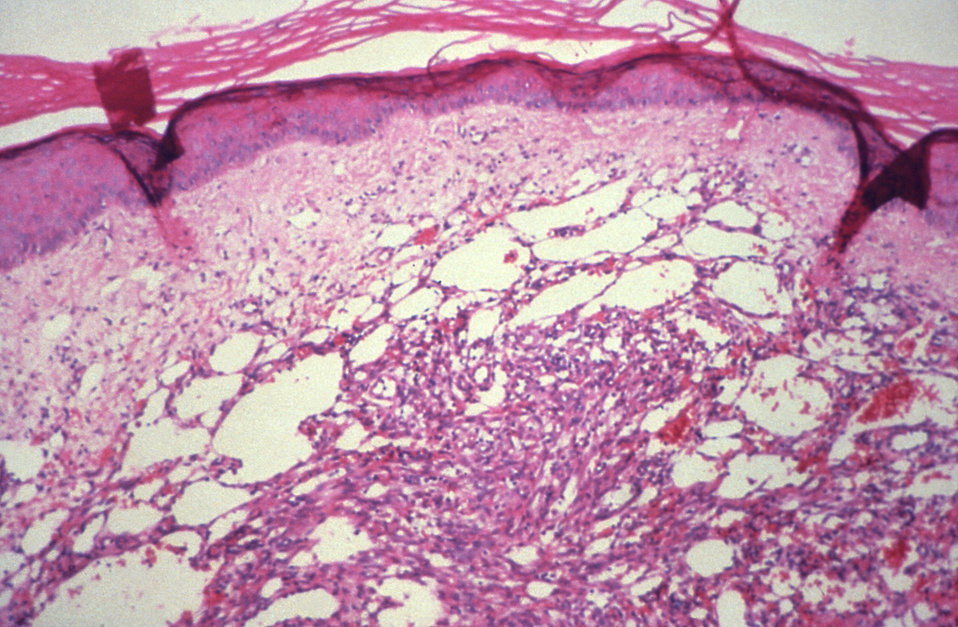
This photomicrograph of a cutaneous biopsy shows Kaposi's sarcoma at a medium magnification.